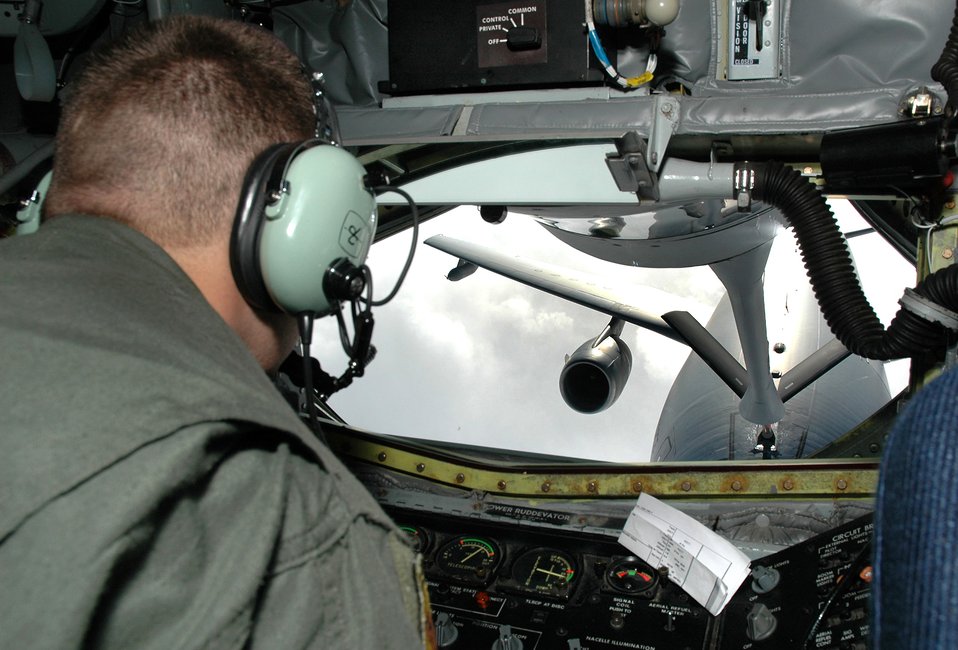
Topping off the Extender

Airman 1st Class Lance Welch practices air refueling with a KC-10 Extender from the 60th Air Mobility Wing during a training mission Jan. 3 originating from Travis Air Force Base, Calif. Airman Welch is boom a operator with the Air Force Reserve Command's 940th Air Refueling Wing.